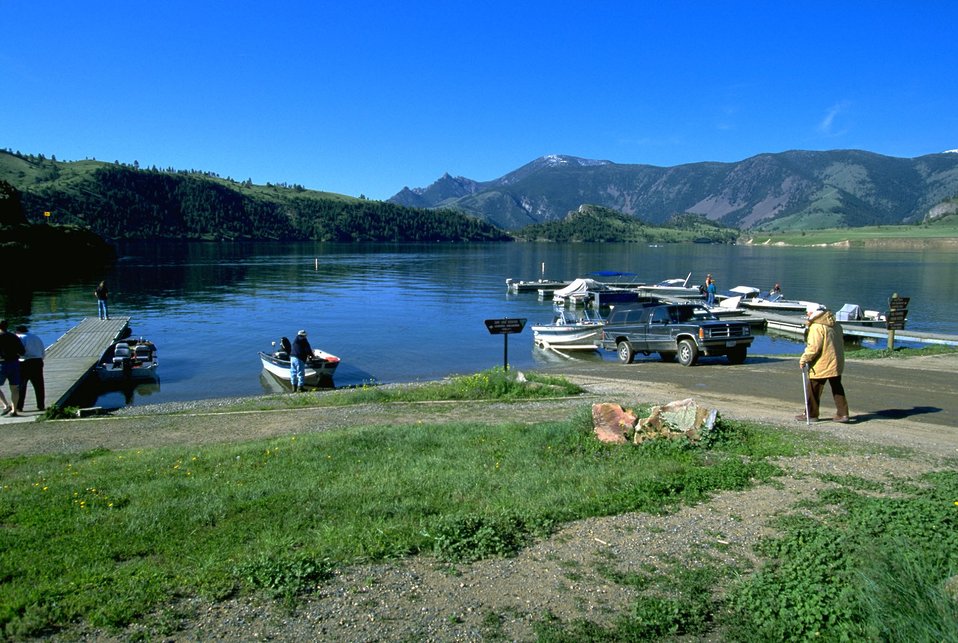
The marina at Log Gulch Campground